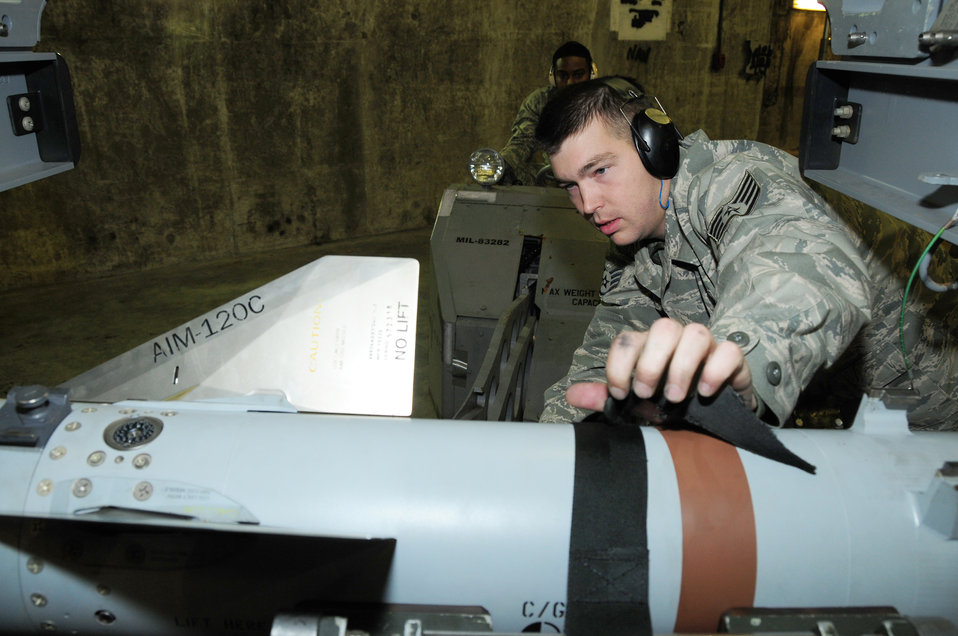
Icelandic Air Policing Mission

Staff Sgt. Ronald Townsend straps an AIM-120 Advanced Medium-Range Air-to-Air Missile to loader Sept. 23, 2010, at Keflavik, Iceland. Sergeant Townsend are deployed from the 748th Aircraft Maintenance Squadron at Royal Air Force Lakenheath, England, in support of NATO's Icelandic Air Policing Mission.